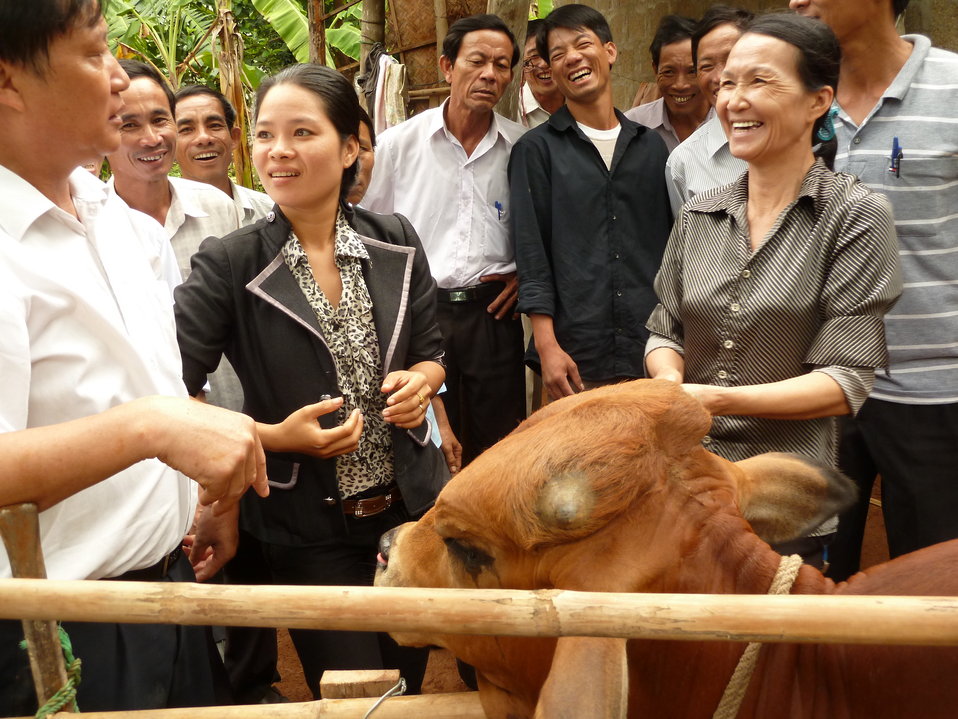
Animal health worker training in Quang Tri Province